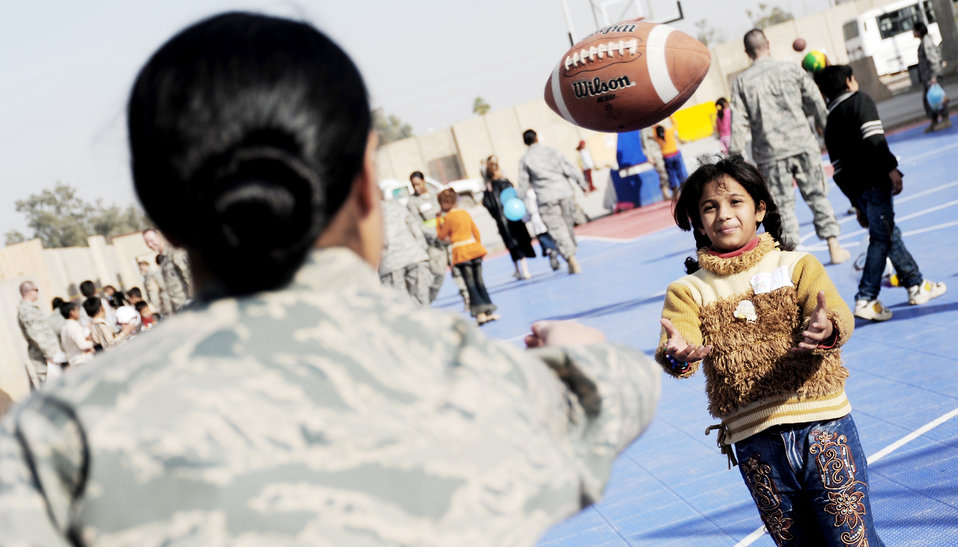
Iraqi kids, U.S. servicemembers enjoy another day of fun, education

Airman 1st Class Valika Lagimaina plays with an Iraqi child during Iraqi Kids Day Dec. 19, 2009, at Joint Base Balad, Iraq. The day provided servicemembers the opportunity to interact with and mentor local children. Airman Lagimaina is from the 332nd Expeditionary Logistics Readiness Squadron.